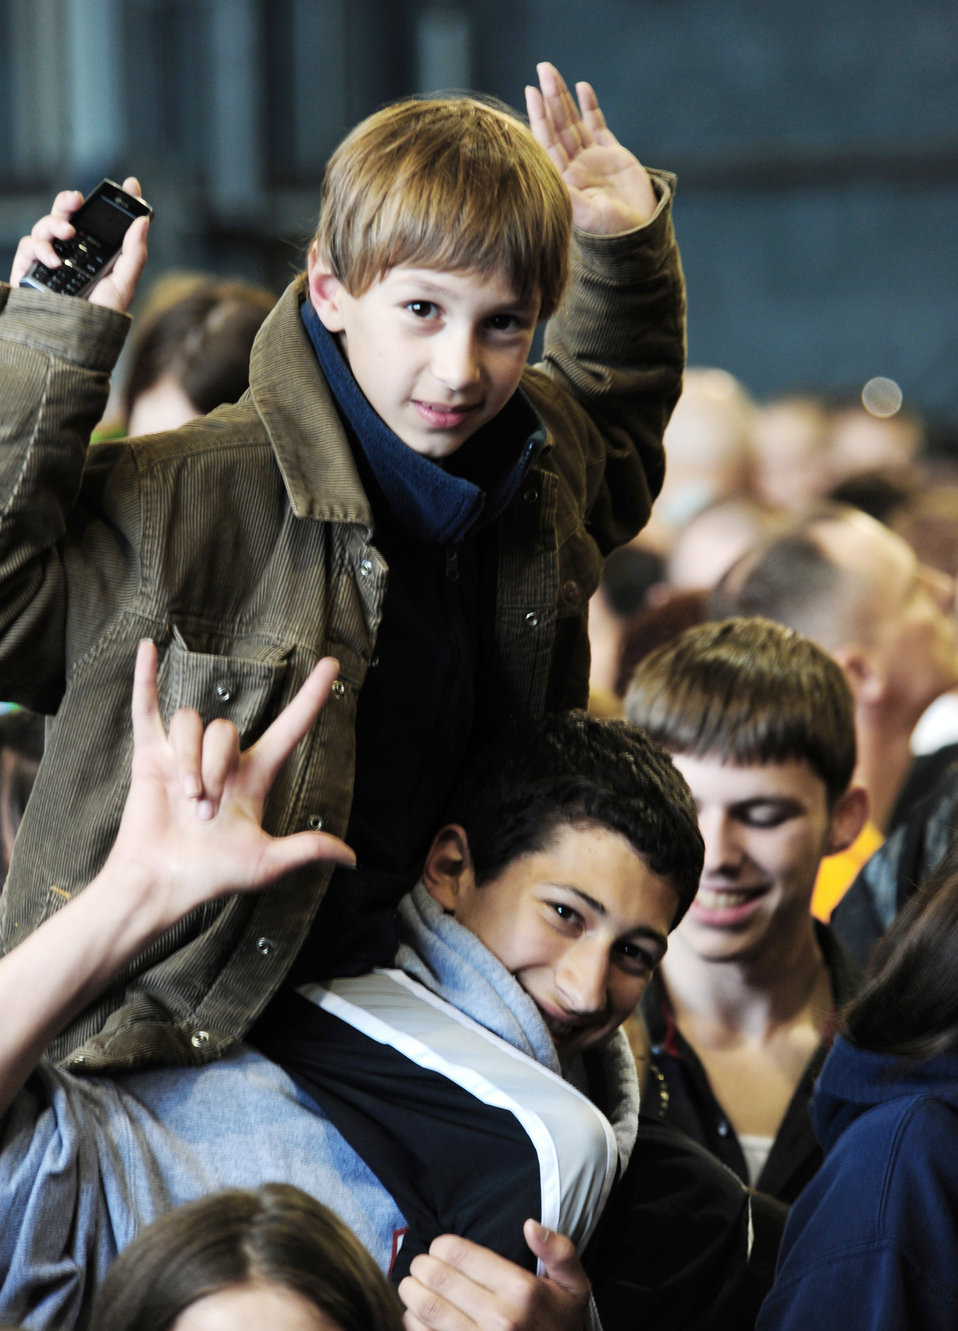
Country star entertains troops in Germany

Members of the Kaiserslautern Military Community watch a Toby Keith concert May 1, 2010, at Ramstein Air Base, Germany. Mr. Keith will be making stops throughout Germany, South Korea and the Persian Gulf during his 14-day tour.